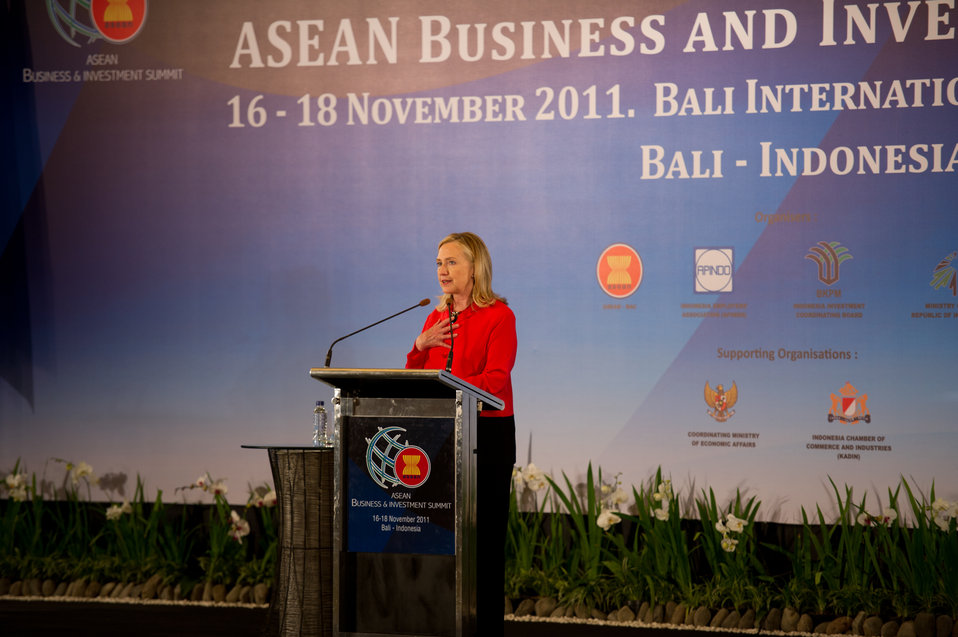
Secretary Clinton Addresses the ASEAN Business Investment Summit

U.S. Secretary of State Hillary Clinton addresses the ASEAN Business Investment Summit in Bali, Indonesia, on November 18, 2011.